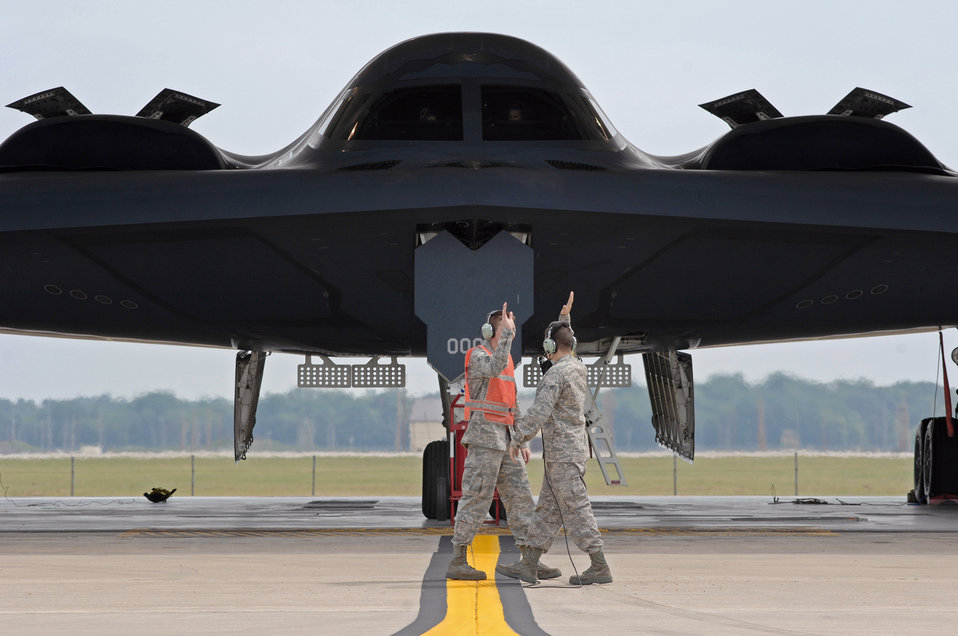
High five crew!

Airmen 1st Class Patrick Holter (left) and Patrick Dixon start the high-five salute as they prepare to launch the first B-2 Spirit of the day Sept. 8, 2009, on the Whiteman Air Force Base, Mo., flightline. The Airmen are crew chiefs with the 509th Aircraft Maintenance Squadron and work around the clock to stay prepared for real world missions.